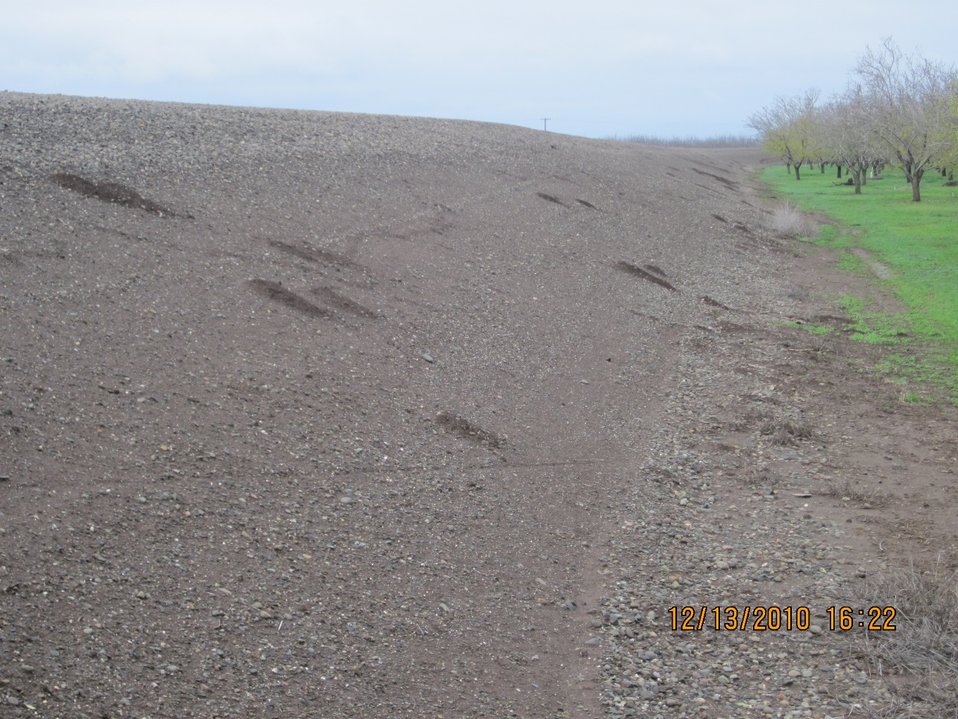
Rodent burrows in a Chico-area levee

Rodent burrows in the Chico, Calif., area, shown during a levee inspection in December 2010. The U.S. Army Corps of Engineers inspects levees in its Rehabilitation and Inspection Program to ensure levees don’t pose an unacceptable risk to lives and to provide levee managers and residents with detailed information on the condition of levees to help them make informed decisions about safety.